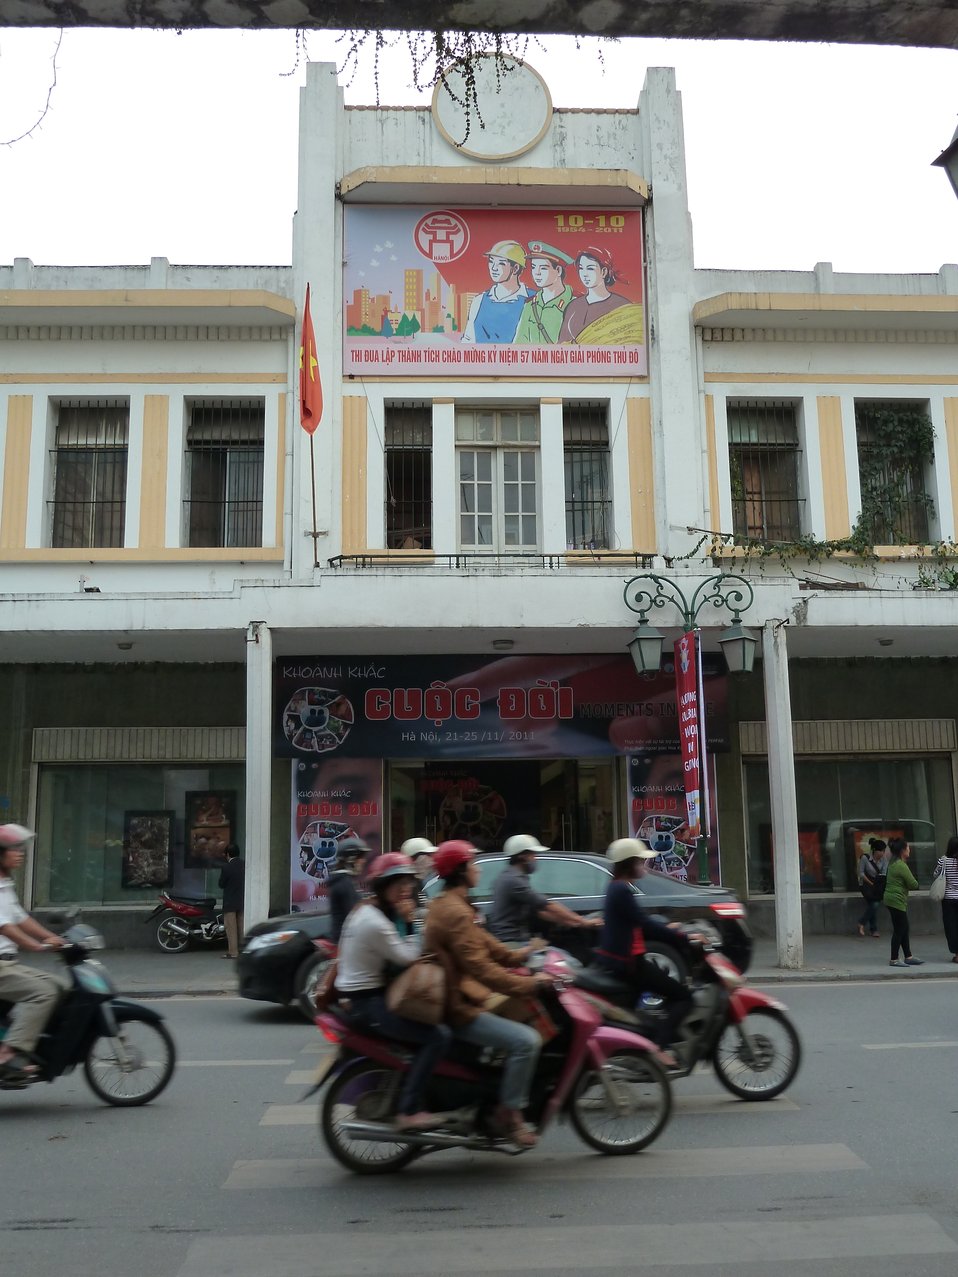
Moments in Life Exhibit: PEPFAR